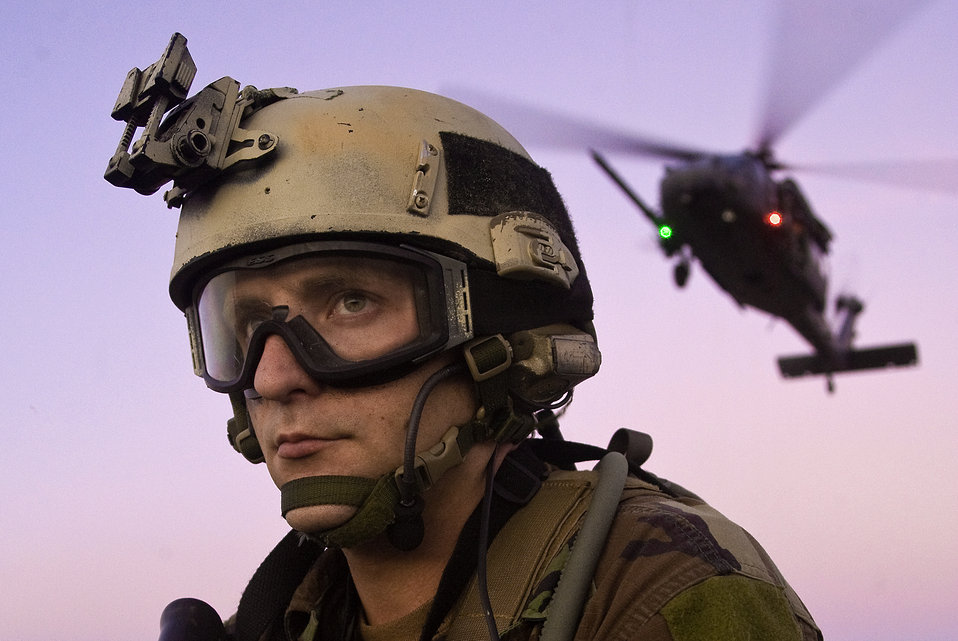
All clear!

Senior Airman Richard Boyd provides security during a rescue training mission March 9 at Patrick Air Force Base, Fla., in preparation for the space shuttle mission STS-119. He is a pararescueman assigned to the Air Force Reserve Command's 920th Rescue Wing.